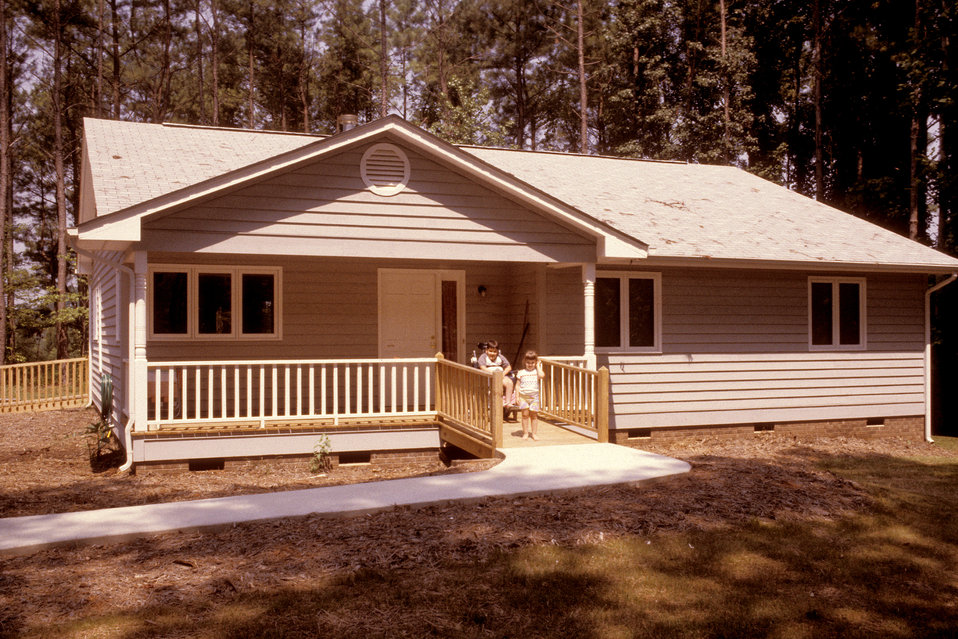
This is one of six images, (PHIL# 9155 - 9160), depicting the exterior of a small, wood frame, clapboard, single story house with a smooth, concrete pathway to the front porch. The porch was roofed, and was level with the first floor of the house. The pathway to the front door crossed a small, railed bridge in order to establish and maintain the proper drainage swale along the front of the house. In this image, a young wheelchair-seated boy was emerging from the porch the 'bridge' with his young sister. A retaining wall supported the earth berm upon which the pathway sat. The projection of a small ramp could be seen, on the left, at the rear of the house. The front door has a full-height sidelight window. This type of stepless, universal entrance avoided the construction, slopes, and maintenance issues of ramped entrances, thereby, avoiding the unattractive and stigmatizing appearance of most ramps.